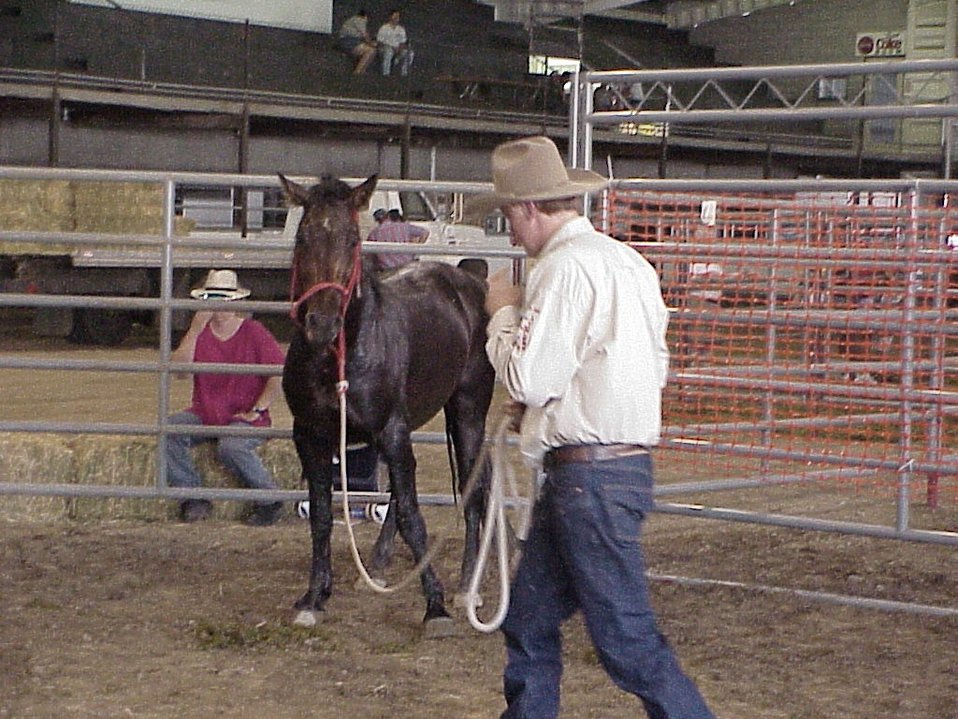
Horse Gentler Mario Johnson Lewiston Wild Horse and Burro Adoption Program Auction WHB indoor auction Cottonwood Field Office UCSC Upper Columbia Salmon Clearwater District